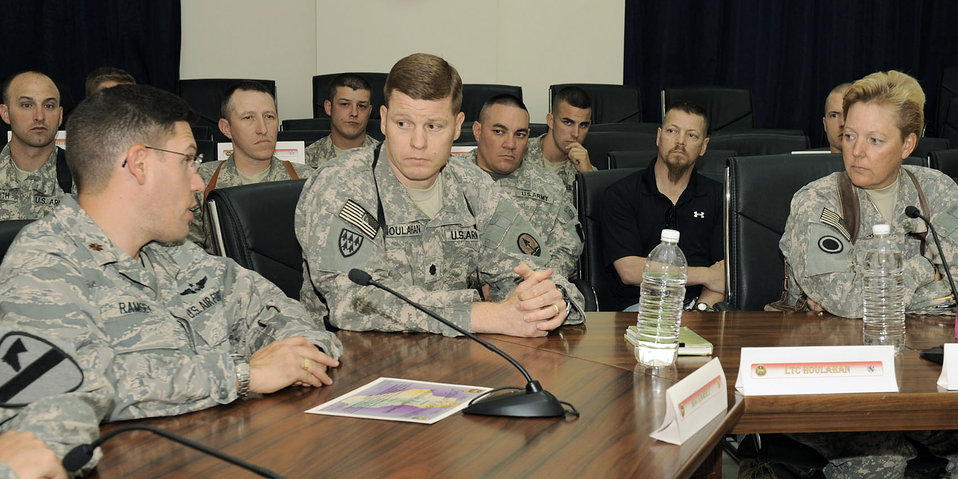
Joint airspace conference takes place in Iraq

Maj. Richard Ramsey (left to right) discusses with Army Lt. Col. James Houlahan and Army Brig. Gen. Heidi V. Brown about an Air Force program already in use in Afghanistan that could work here at the Multinational Corps-Iraq Joint Operations Center May 31 at Camp Victory, Iraq. Key players from the Army, Air Force and civilians from all over Iraq and the Combined Air Operations Center discussed the complexities of managing the joint air picture and how to improve joint tactics, techniques and procedures. Major Ramsey is a joint interface control officer at the Combined Air Operations Center deployed from Hill Air Force Base, Utah. He is a native of Joliet, Ill. Colonel Houlahan is the Multinational Corps-Iraq air missile defense cell chief and General Brown is the MNC-I deputy commander. They are deployed from Fort Lewis, Wash.